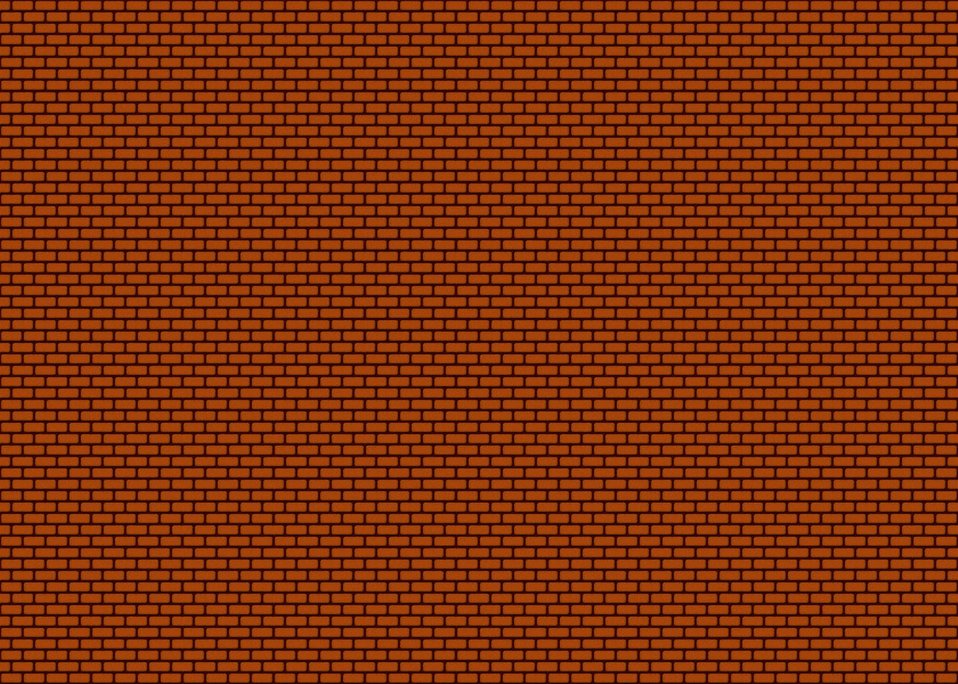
Bricks - ideal as a background image.